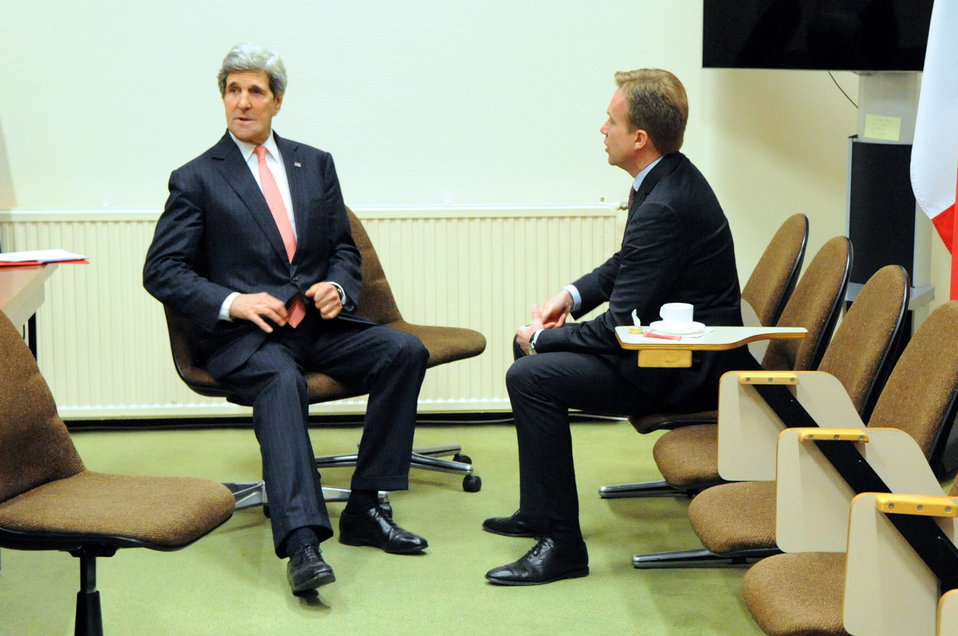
Secretary Kerry Chats With Norwegian Foreign Minister Brende in Brussels

U.S. Secretary of State John Kerry and Norwegian Foreign Minister Borge Brende hold an informal meeting on the sidelines of the NATO Ministerial Meeting in Brussels, Belgium, on April 2, 2014.